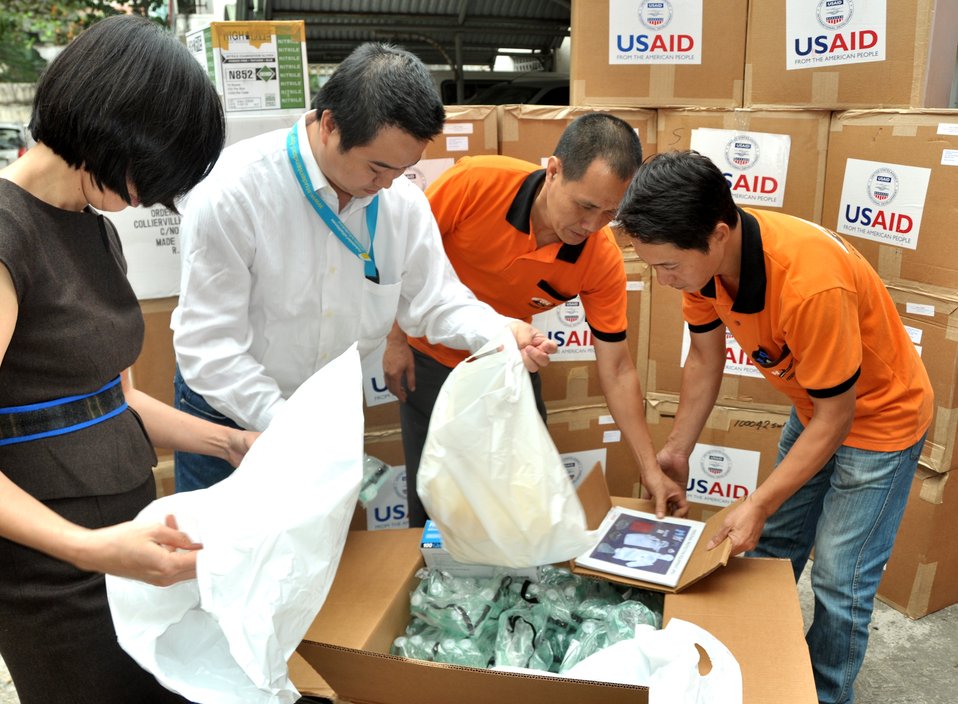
USAID hands over personal protective equipment to the Department of Animal Heath under Vietnam’s Ministry of Agriculture and Rural Development.

Hanoi, November 20, 2013.